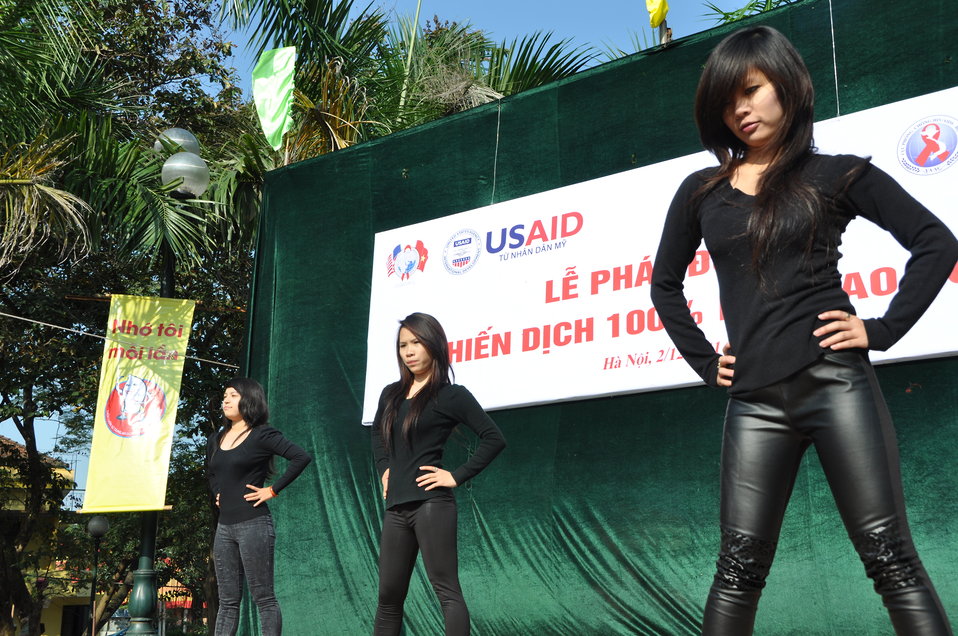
100% Condom Use Campaign Launch, Dec. 2, 2011